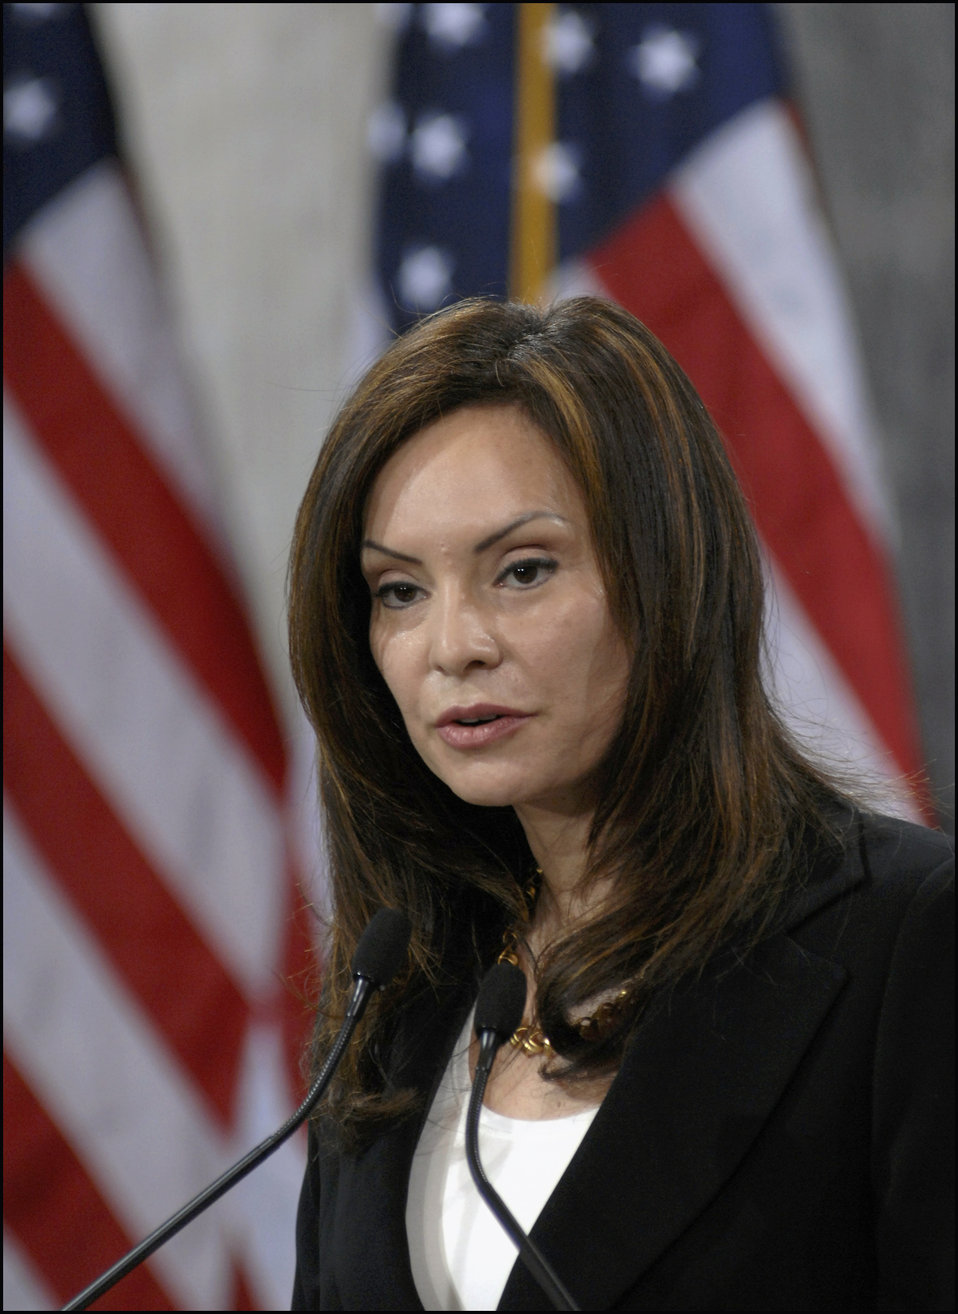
Women in Finance Symposium, 03/29/2010

Treasurer Rios speaks at the Women in Finance Symposium, March 29, 2010.